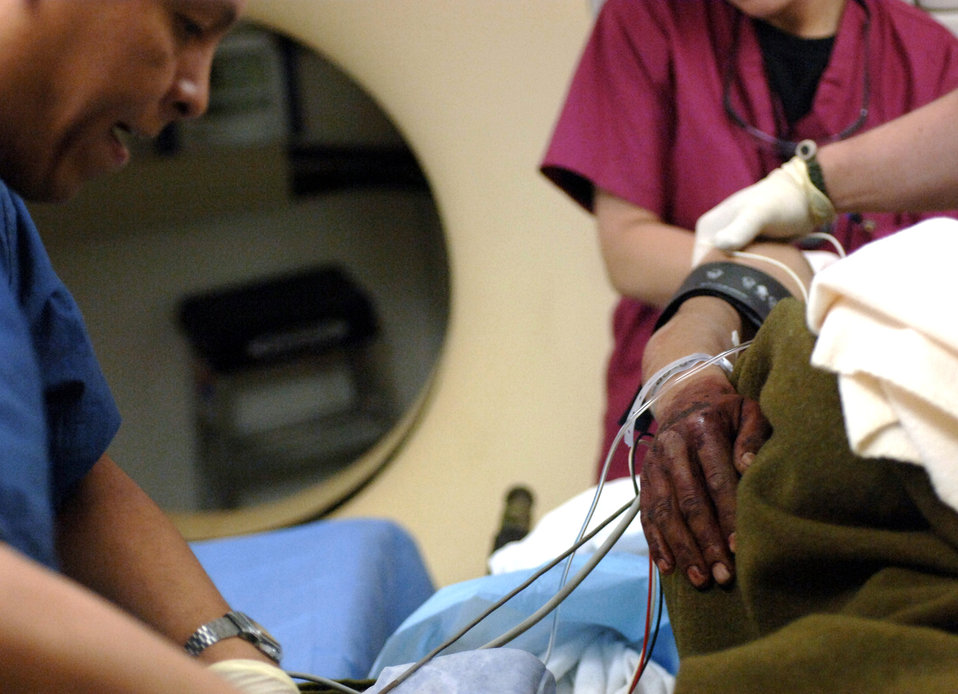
Radiology staff provides reliable, rapid response in Iraq

Staff Sgt. Orlando Martinez prepares a patient for a CT scan at the Air Force Theater Hospital Feb. 19 at Balad Air Base, Iraq. The radiology staff has two new 16 slice CT scanners that expedite the process from 90 minutes to about 10 minutes. Sergeant Martinez is a diagnostic imaging specialist assigned to the 332nd Expeditionary Medical Group.